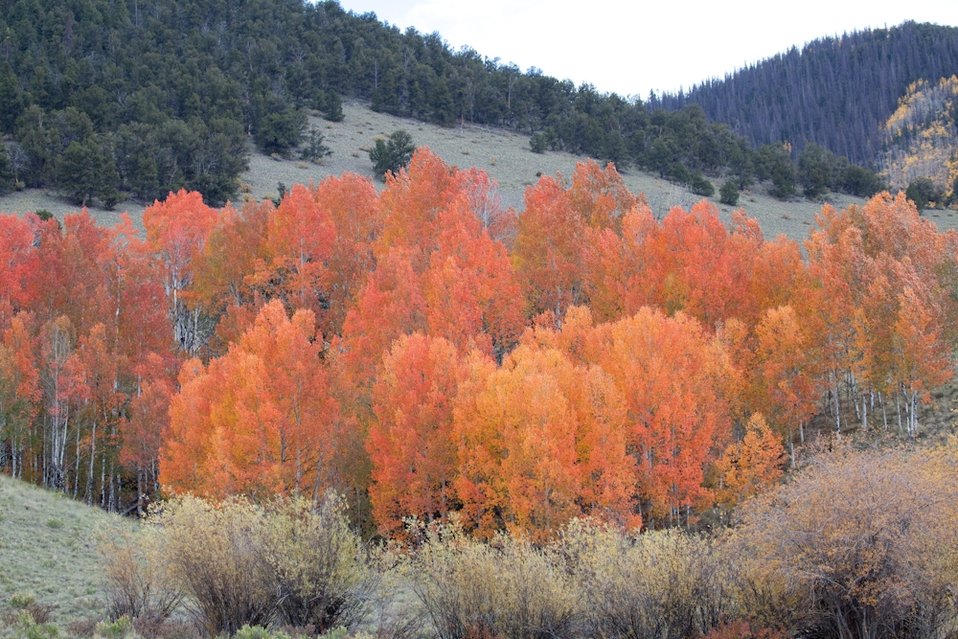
A grove of aspens burst into color near Forest Road 528 on the Rio Grande National Forest in Southern Colorado.